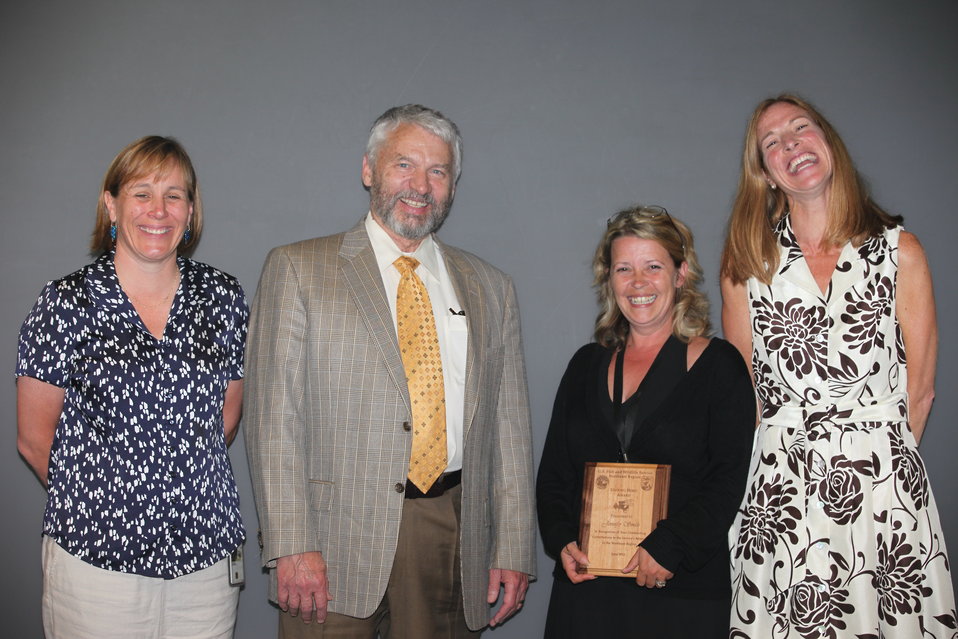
Jennifer Smith in Contracting and General Services was awarded a Region 5 Unsung Hero Award.
From left to right: Deputy Regional Director Deb Rocque, Deputy Director Rowan Gould, Jennifer Smith, and Regional Director Wendi Weber